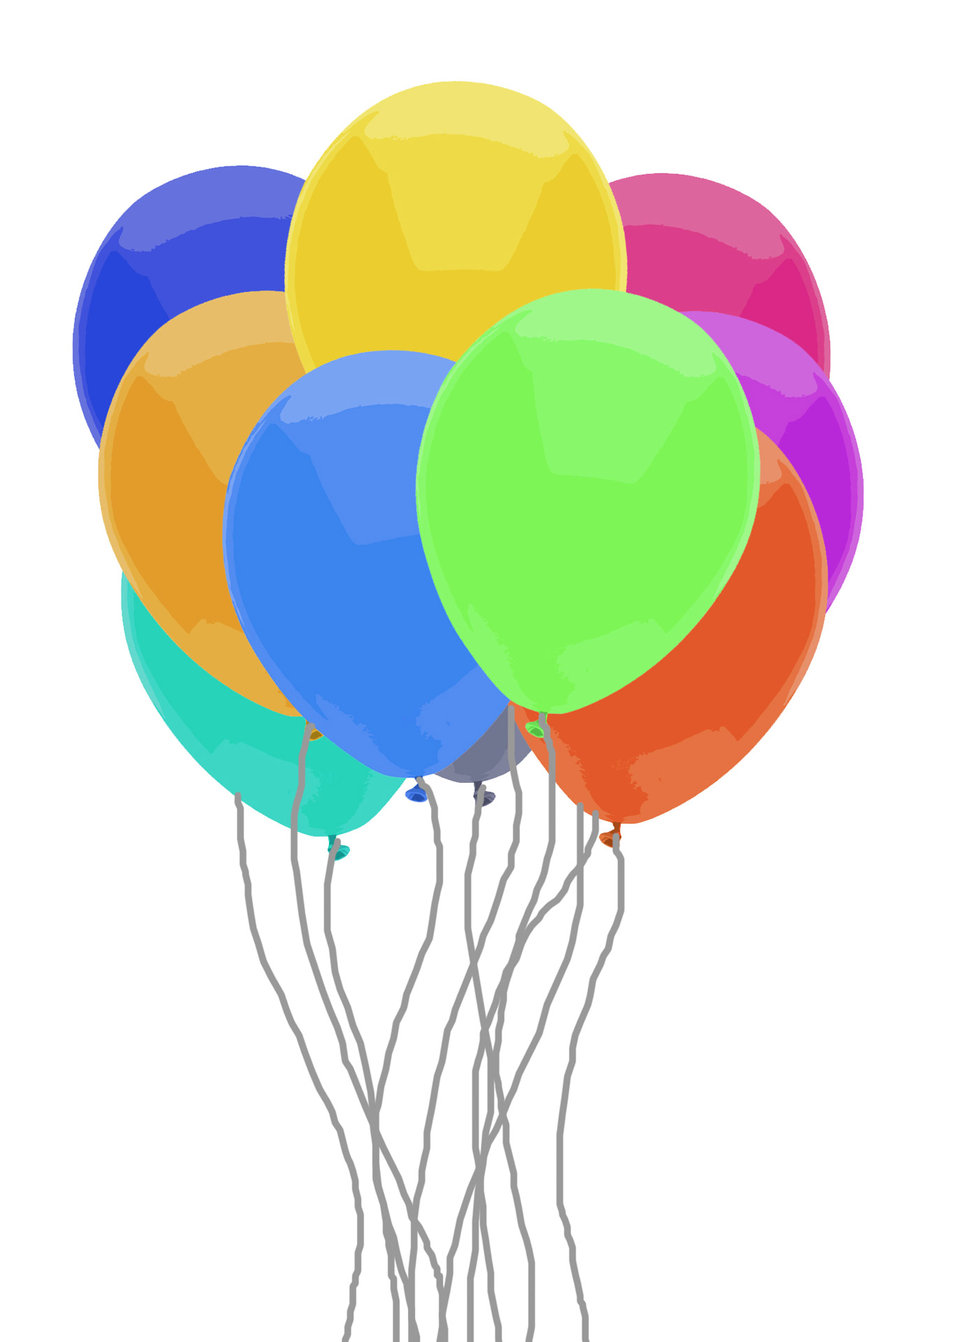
Rainbow balloon bunch.